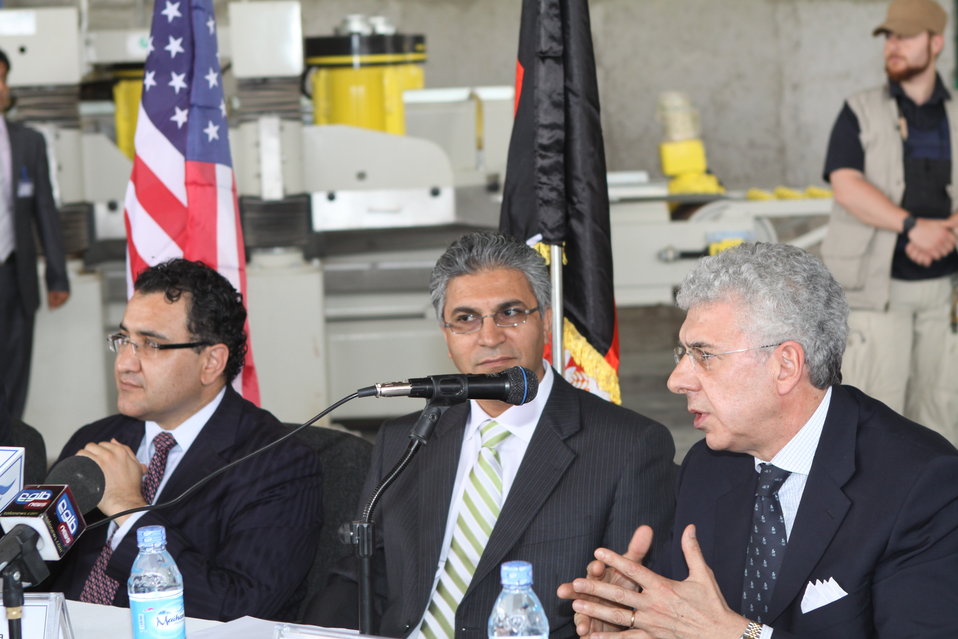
100525 Hirat Marble Conference 341